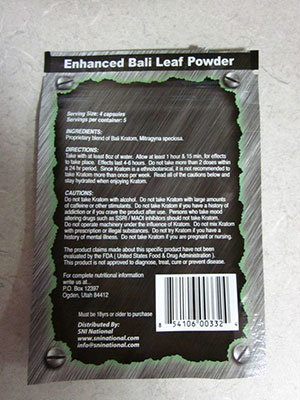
RECALLED – Maeng Da Kratom, Max Kratom, and Bali Kratom

March 14, 2014 – Product Recall – SNI National is Voluntarily recalling Kratom XL 4 Pack, Maeng Da Kratom 10 Pack, Max Kratom 20 Pack, and Bali Kratom 40 pack Due to Undeclared Drug Ingredients.